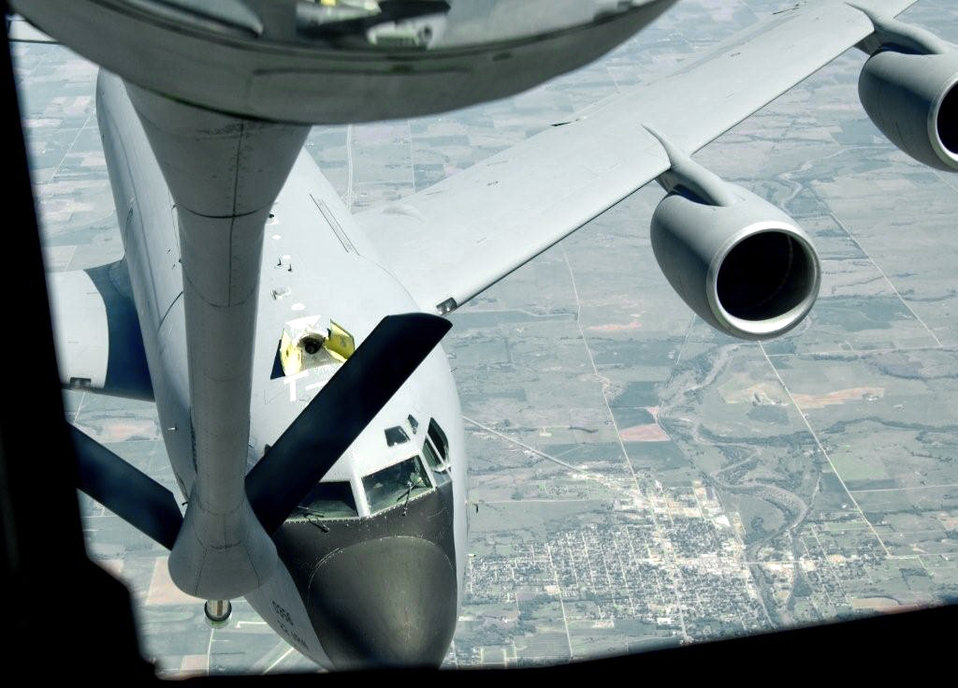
Gold Star Mothers visit McConnell

A KC-135 Stratotanker refuels another KC-135 during a refueling mission May 4, 2010. At the conclusion of a Mother's Day tribute, members of the American Gold Star Mothers, a national organization of mothers who have lost a son or daughter in the service of the country, participated in a refueling flight in a KC-135.